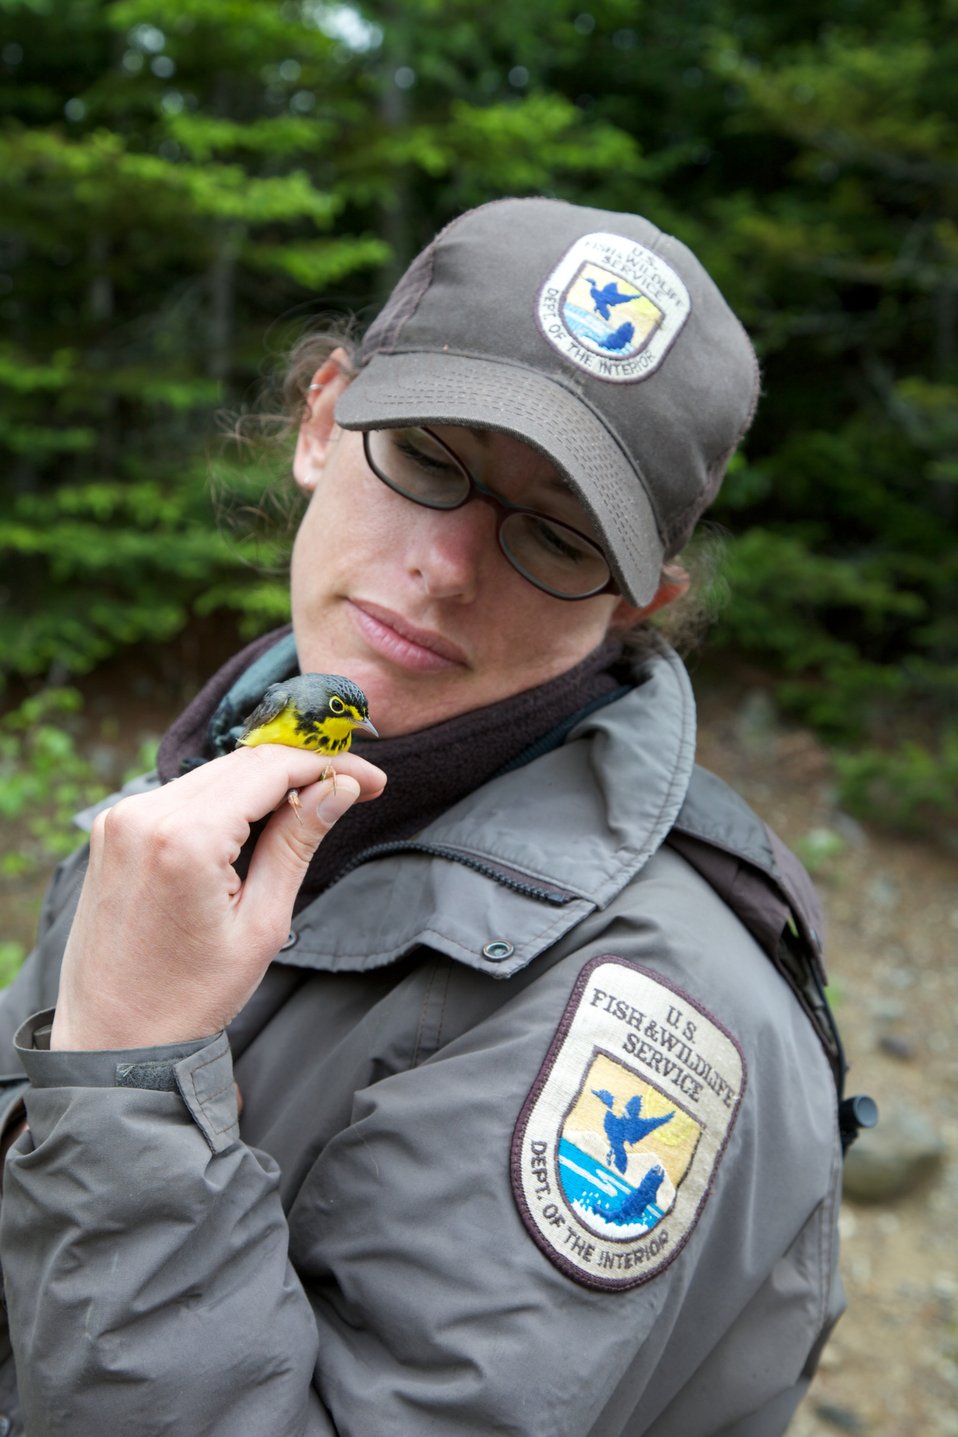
USFWS Biologist

Rachel Cliche with a Canada Warbler. Nulhegan Basin Division, Silvio O. Conte National Wildlife Refuge.